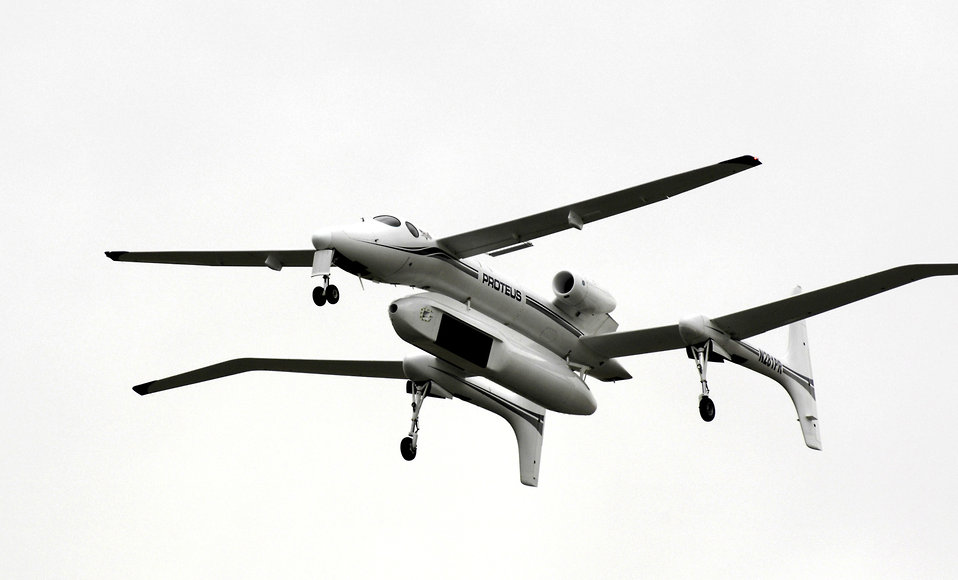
Next-generation radar testing

The Proteus takes off from Mojave Airfield near Edwards Air Force Base, Calif., on Thursday, April 27, 2006. It carries the pod that eventually will contain the radar to be used on the Global Hawk unmanned aerial vehicle. A year of testing will begin in September once the radar is installed on Proteus.